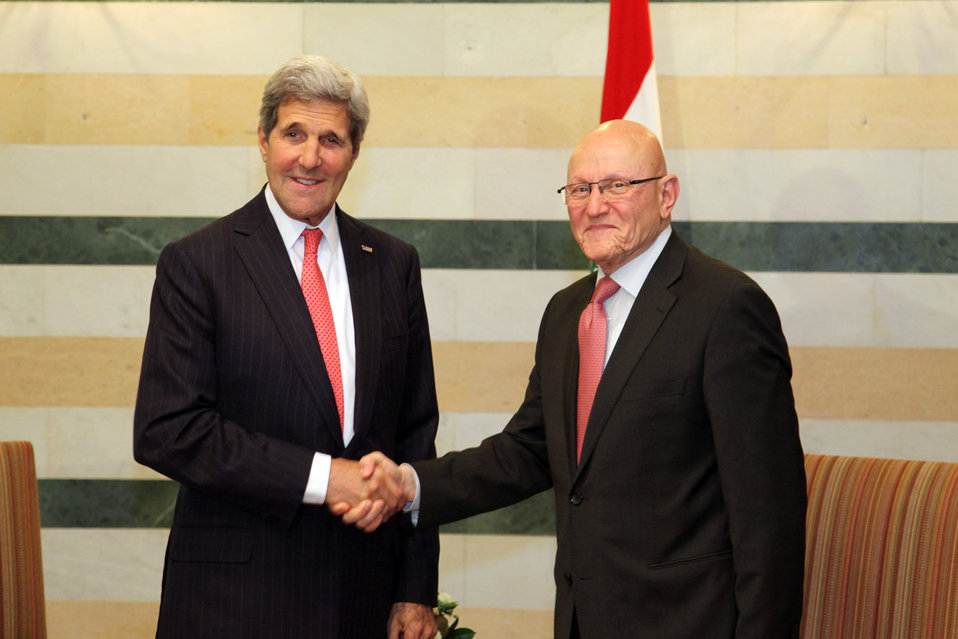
Secretary Kerry Meets With Lebanese Prime Minister Salam in Beirut

U.S. Secretary of State John Kerry meets with Lebanese Prime Minister Tammam Salam at the Prime Minister's office in Beirut, Lebanon, on June 4, 2014.